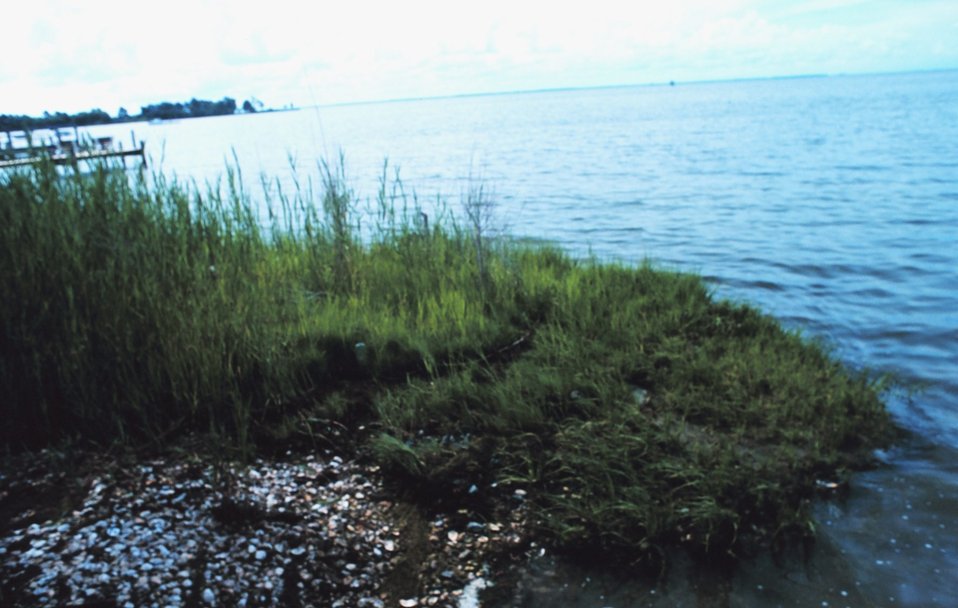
Grass, shells and docks along Tilghman Island.